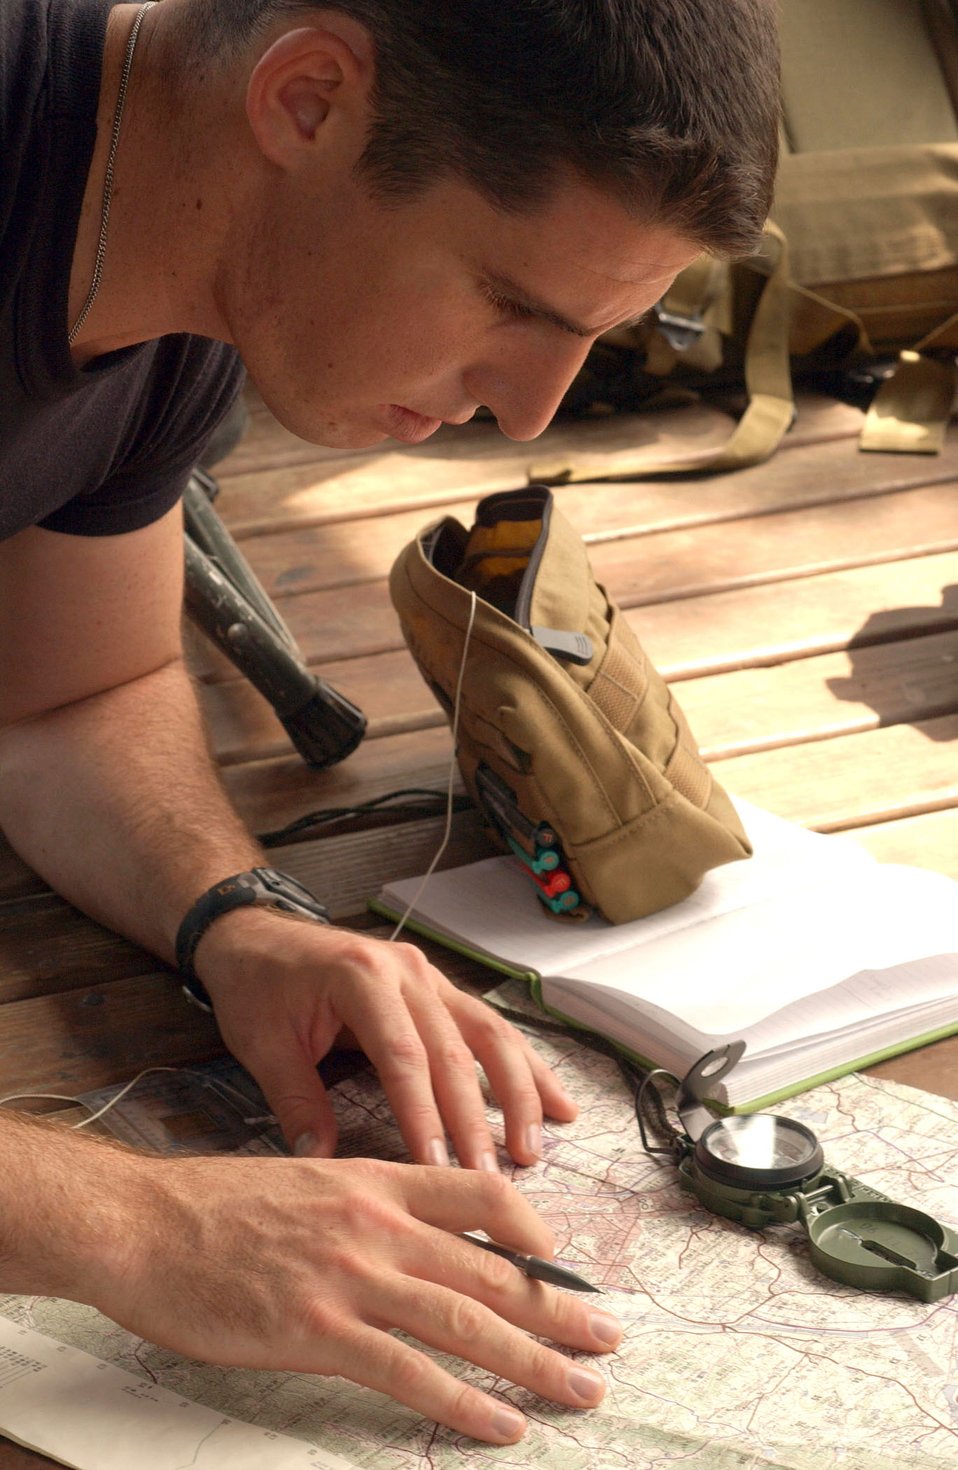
Controllers train to put bombs on target, on time

Airman Stephan C. Cunningham plots coordinates in preparation for a simulated air strike July 12 at Jeonju, South Korea. Airman Cunningham is a tactical air controller assigned to the 604th Air Support Operations Squadron at Army Garrison Casey in South Korea. Tactical air controllers work with joint terminal attack controllers to support friendly and coalition ground forces when close-air support is needed. Tactical air controllers and joint terminal attack controllers team with pilots based at Kunsan Air Base, South Korea, to hone their abilities to perform close-air support missions.